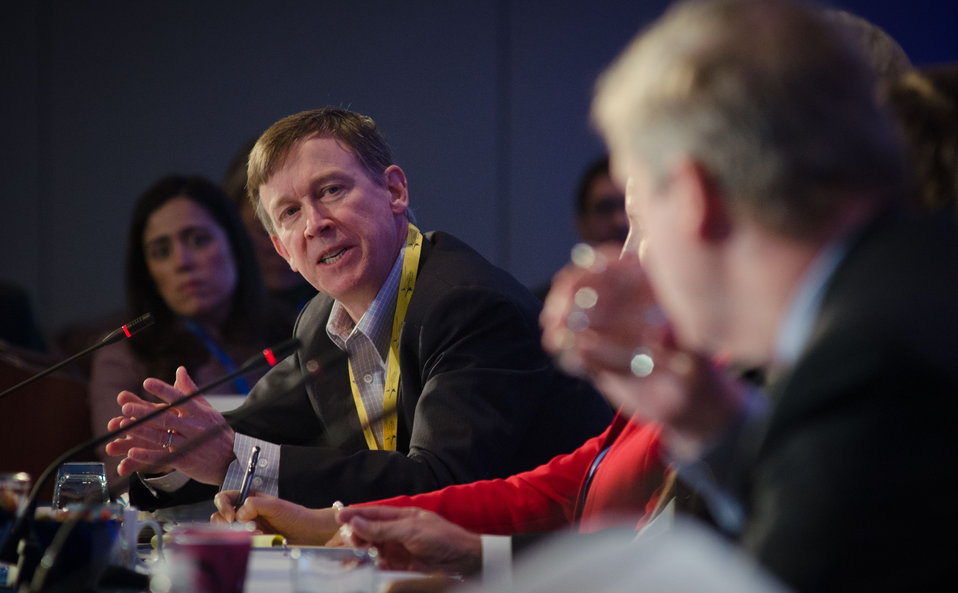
Colorado- Governor John Hickenlooper (center) talks with Agriculture Secretary Tom Vilsack (right) about how most Colorado schools have produce gardens to educate and supplement the schools nutrition program, during the National Governors Association Education, Early Childhood and Workforce Committee meeting in Washington, D.C., on Sunday, February 26, 2012.